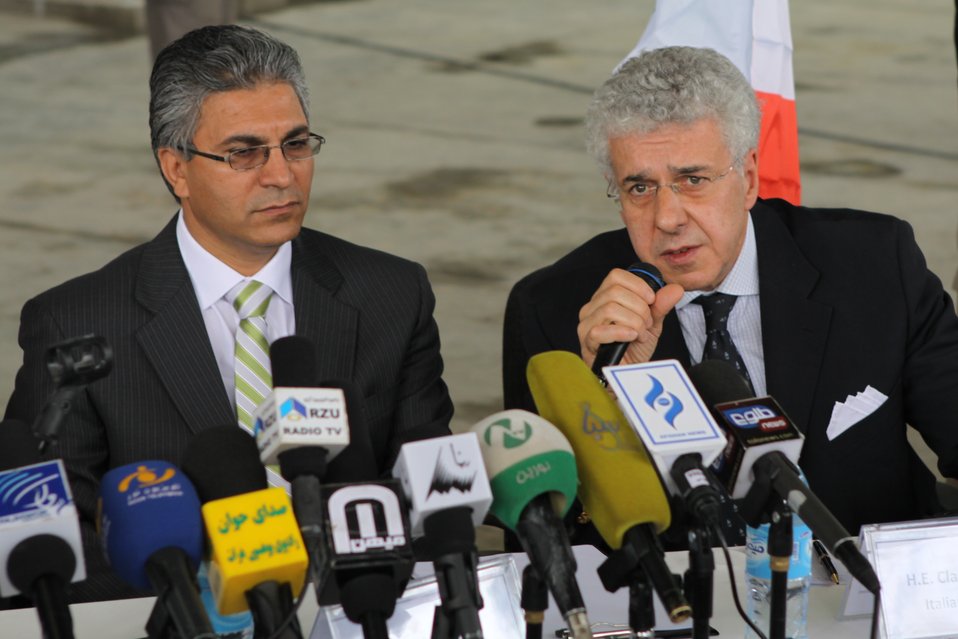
100525 Hirat Marble Conference 352